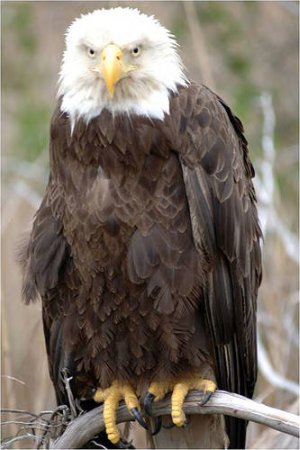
bald eagle